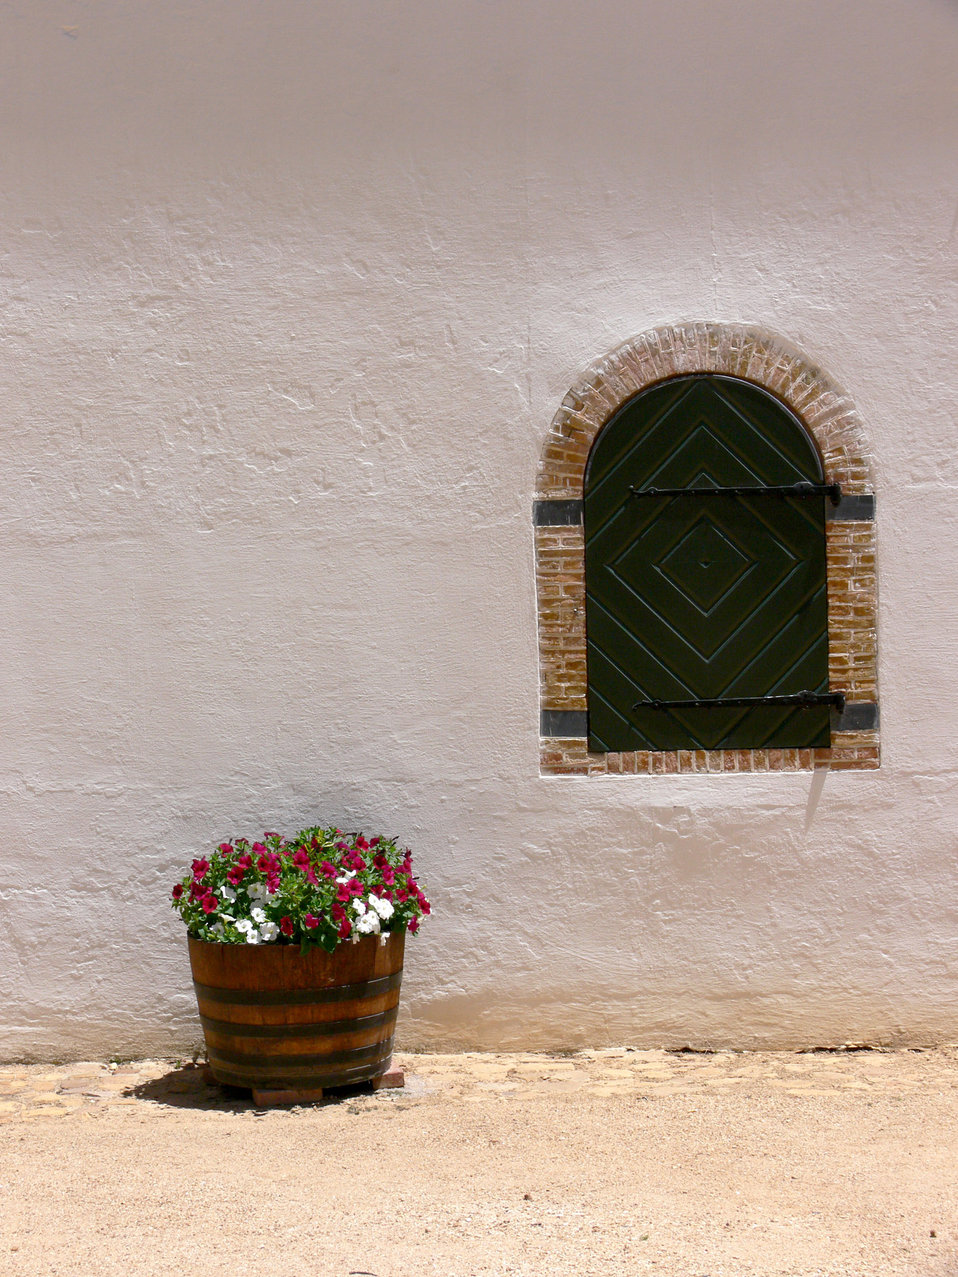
Window and flowers

Brick edged window in whitewashed wall with tub of flowers.